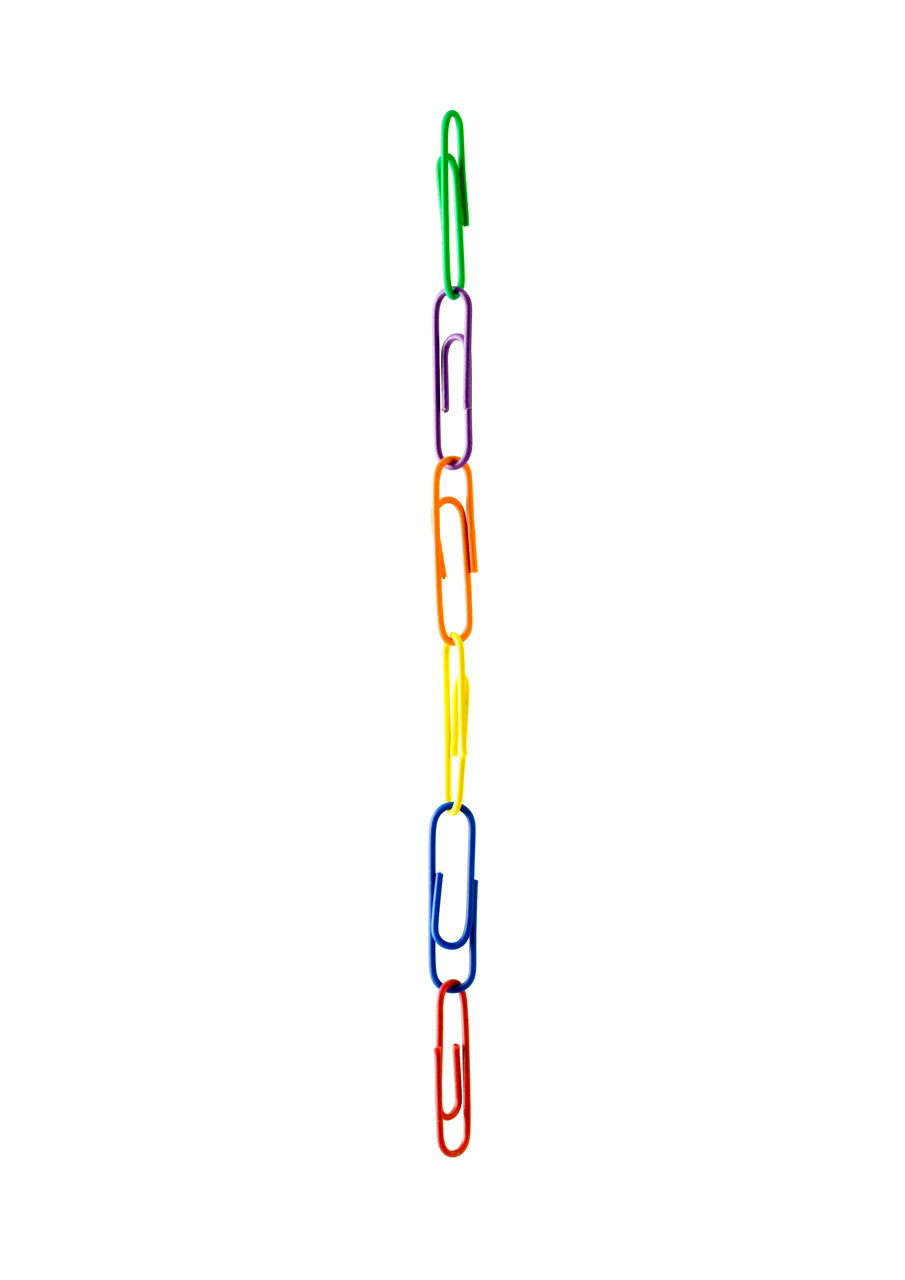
Paper clips chain on white background.